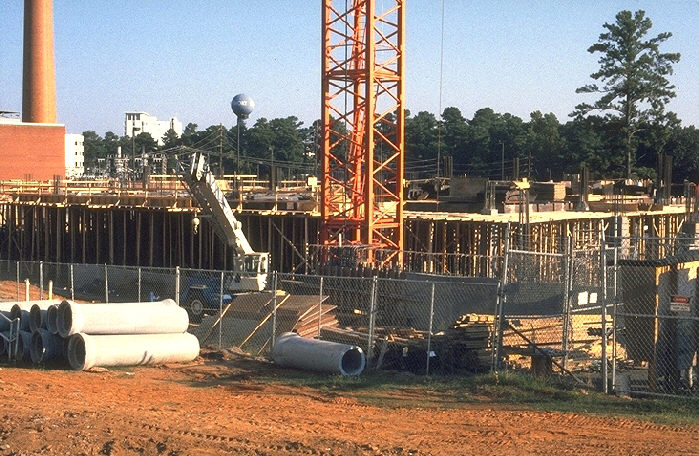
On the Centers for Disease Control's (CDC) Roybal Campus, located in metropolitan Atlanta, Georgia, this September, 1998 image depicts the early phases of construction of Building 17.